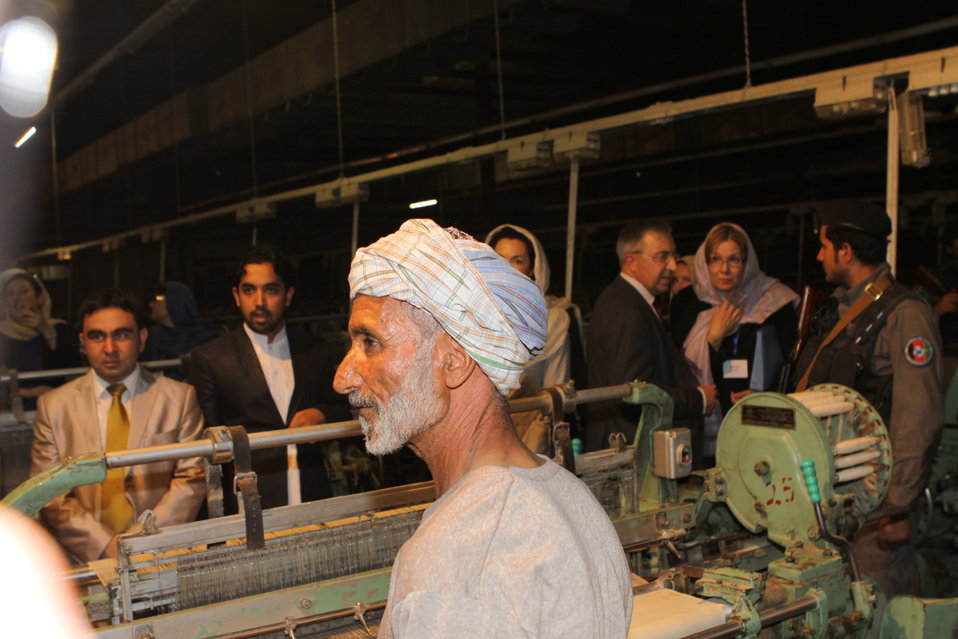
100525 Hirat Textile Company 759